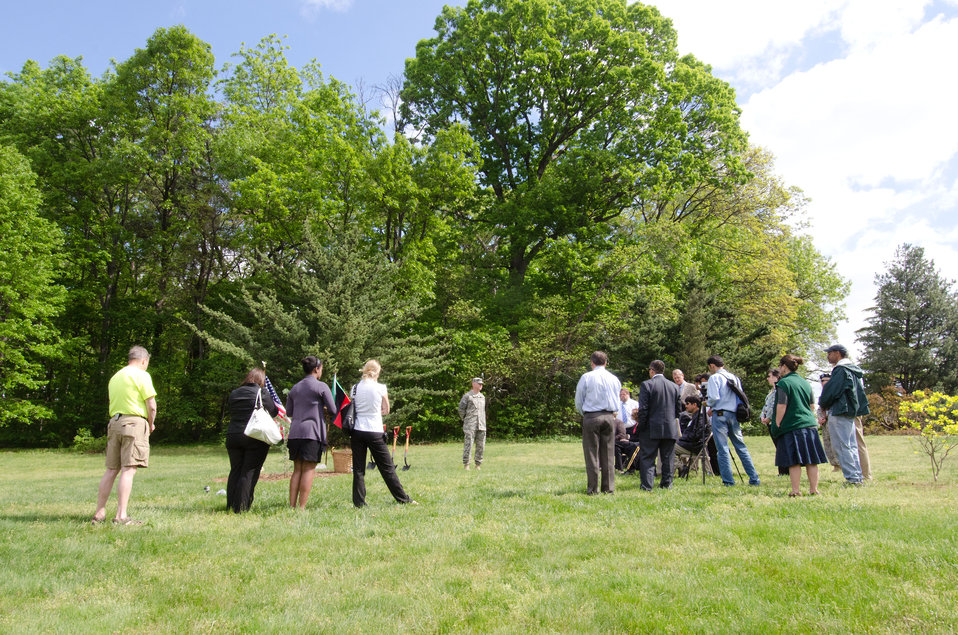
Among the great variety of trees at the U.S. National Arboretum, Director of Agribusiness Development Team (ADT) Program, National Guard Bureau Lt. Col. Howard Schauer (center) spoke to the assembled audience at the Arbor Day tree planting of a Cedrus deodara ('Karl Fuchs') in honor of an Afghan deligation and to represent the bond with Afghanistan. It is the first tree of its kind to be planted on the grounds. The tree is originally from Pakta Province and the most important tree in Afghanistan for timber.